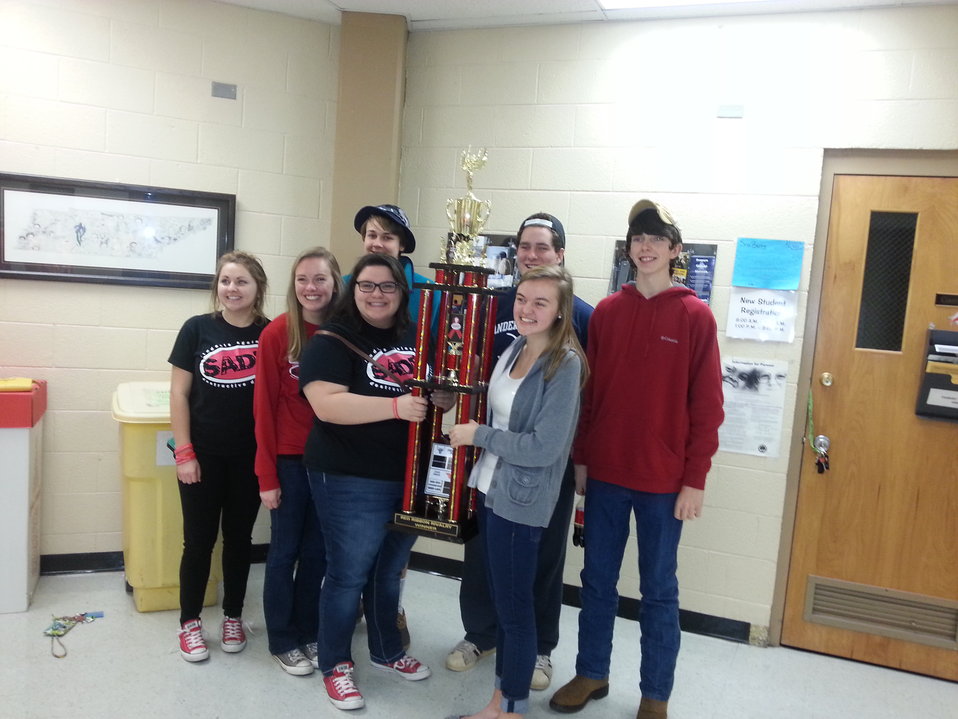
TN Teens 'Take a Stand' during NDFW

During National Drug Facts Week, students from Tennessee’s Clinton High School beat rival sister school Anderson County High in their 'red ribbon rivalry' by raising over $600 for drug and alcohol prevention programs in our county. We also took home a giant trophy!